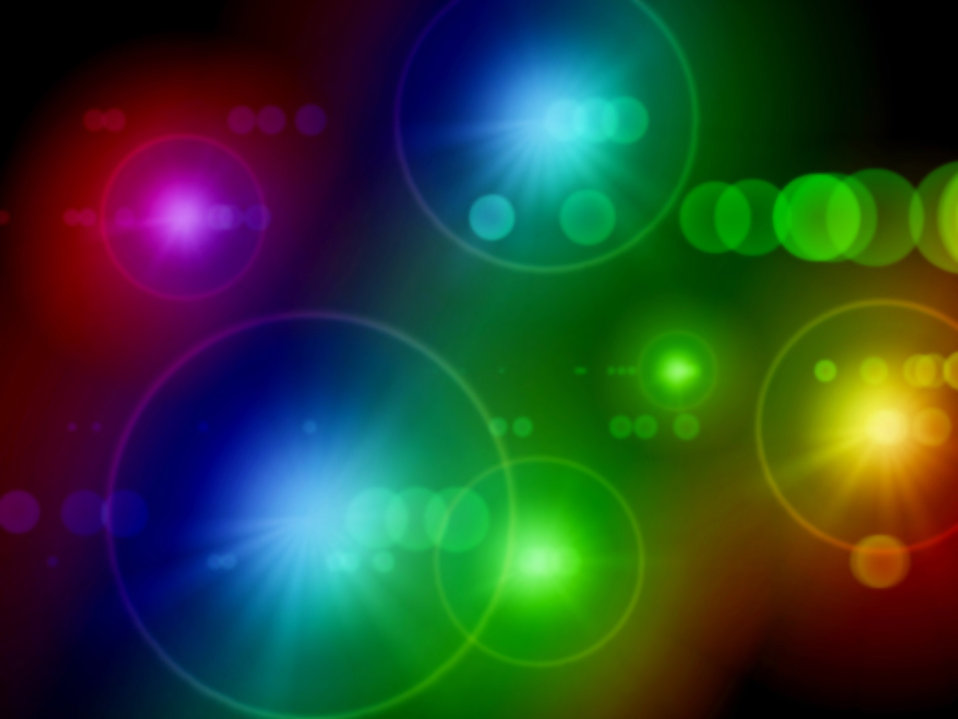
Background 302

Background.